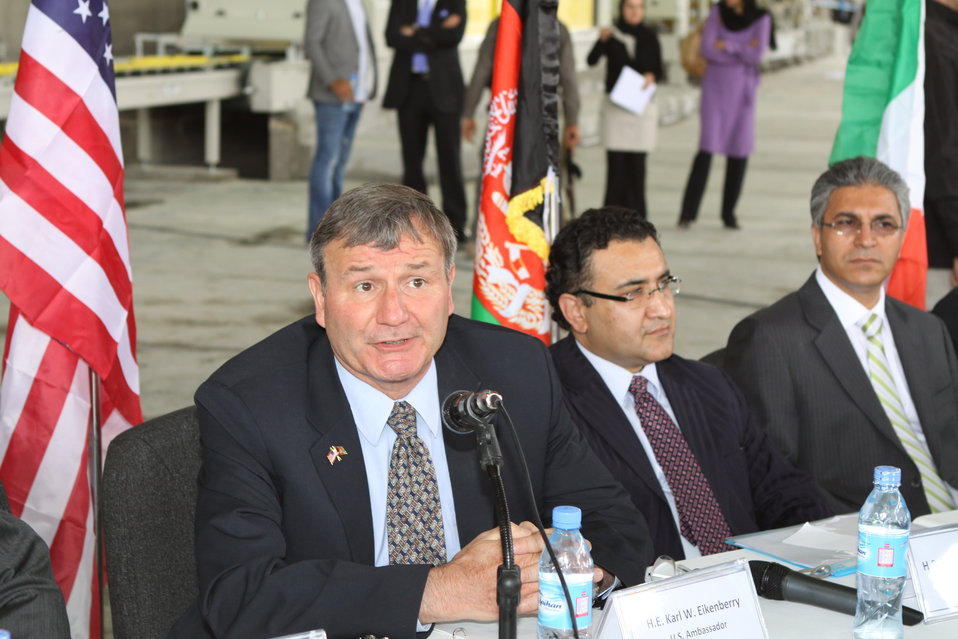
100525 Hirat Marble Conference 327